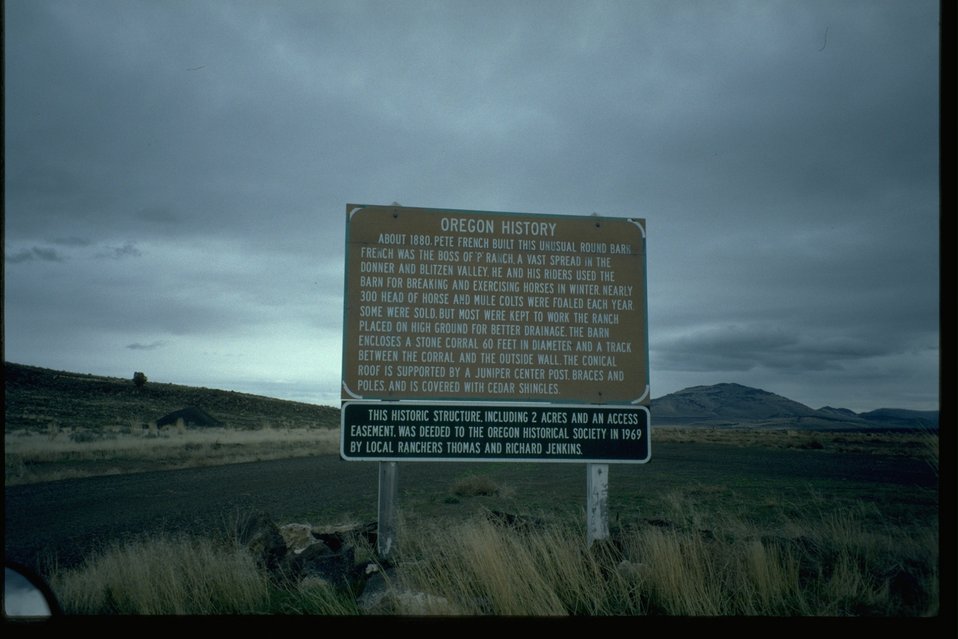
State historical panel at Peter French's Round Barn.